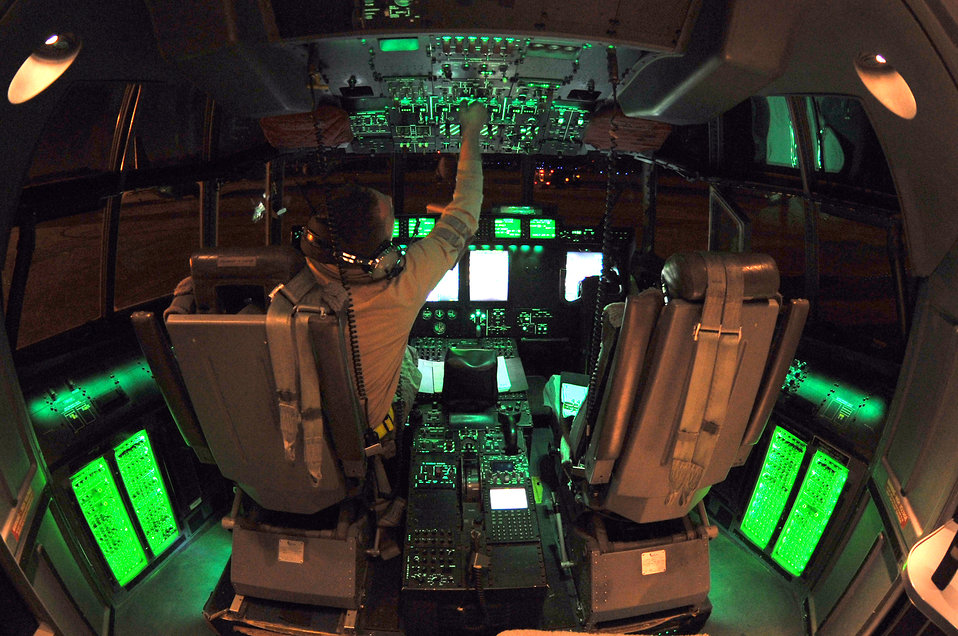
C-130 maintenance operations

Staff Sgt. Troy Miller checks fuel tank levels from the flight deck of a C-130 Hercules March 24, 2011, at Little Rock Air Force Base, Ark. Sergeant Miller is a panel operator assigned to the 19th Component Maintenance Squadron.